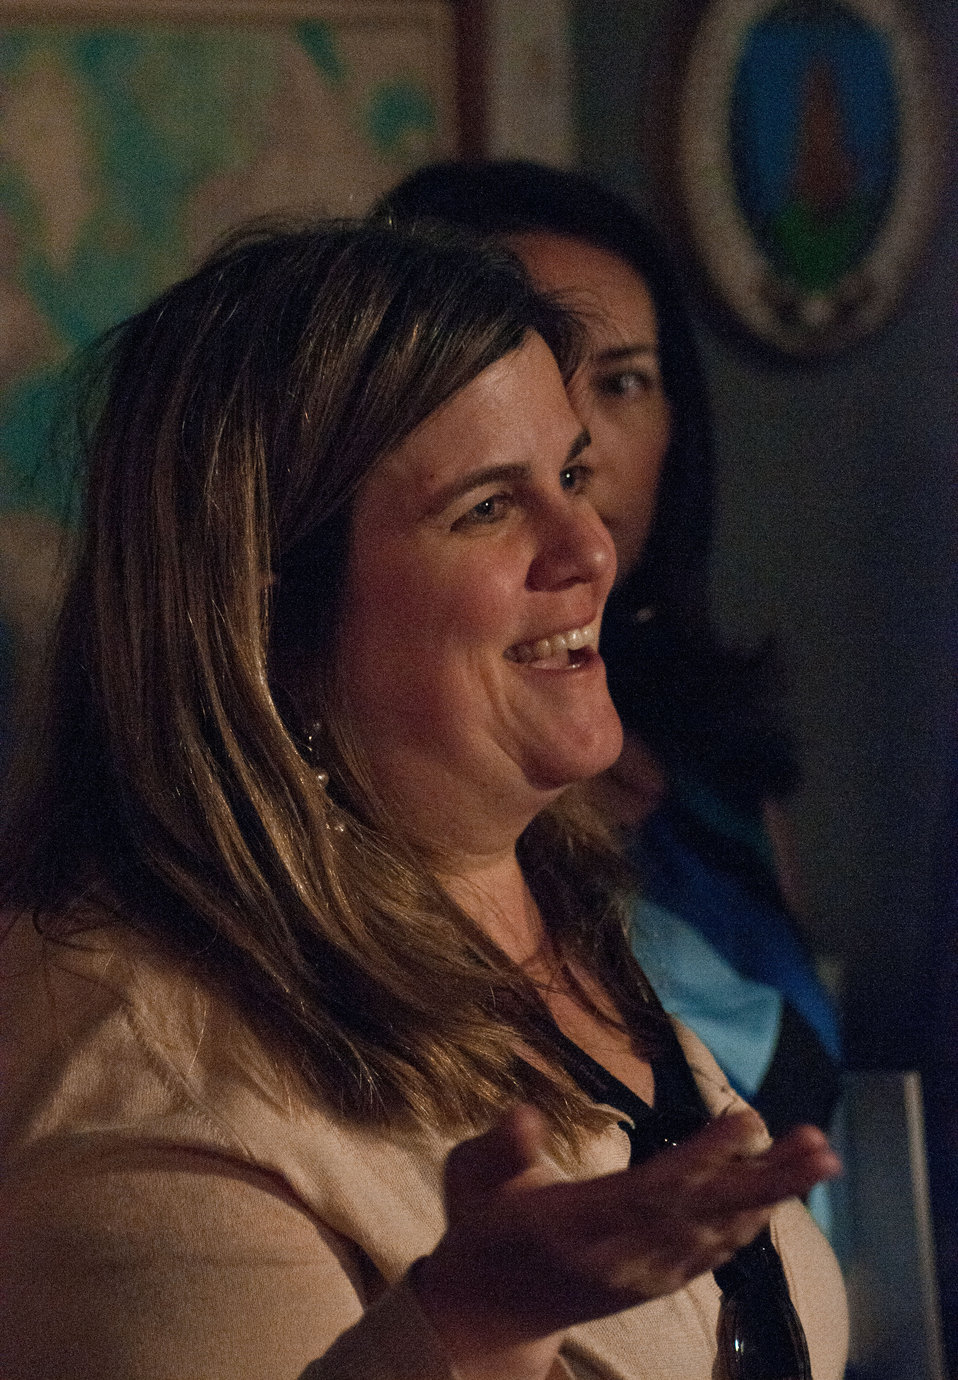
A reporter asks Agriculture Secretary Tom Vilsack a question at a news conference at the announcement of the new food icon MyPlate at the U.S. Department of Agriculture in Washington, D.C. on Thursday, June 2, 2011. MyPlate is an easy-to-understand visual cue to help consumers adopt healthy eating habits that are consistent with the 2010 Dietary Guidelines for Americans.